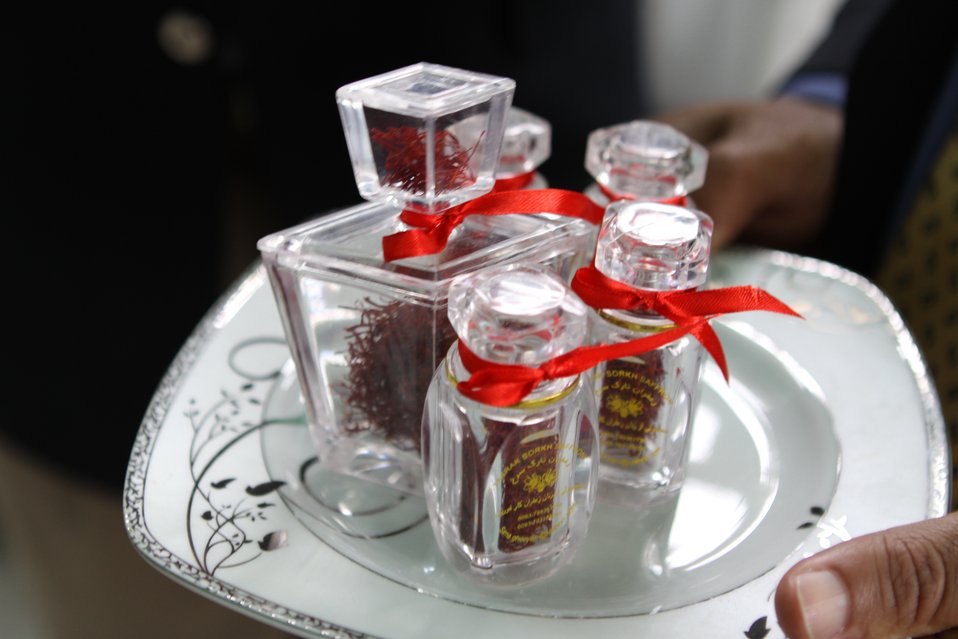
100525 Hirat Marble Conference 546